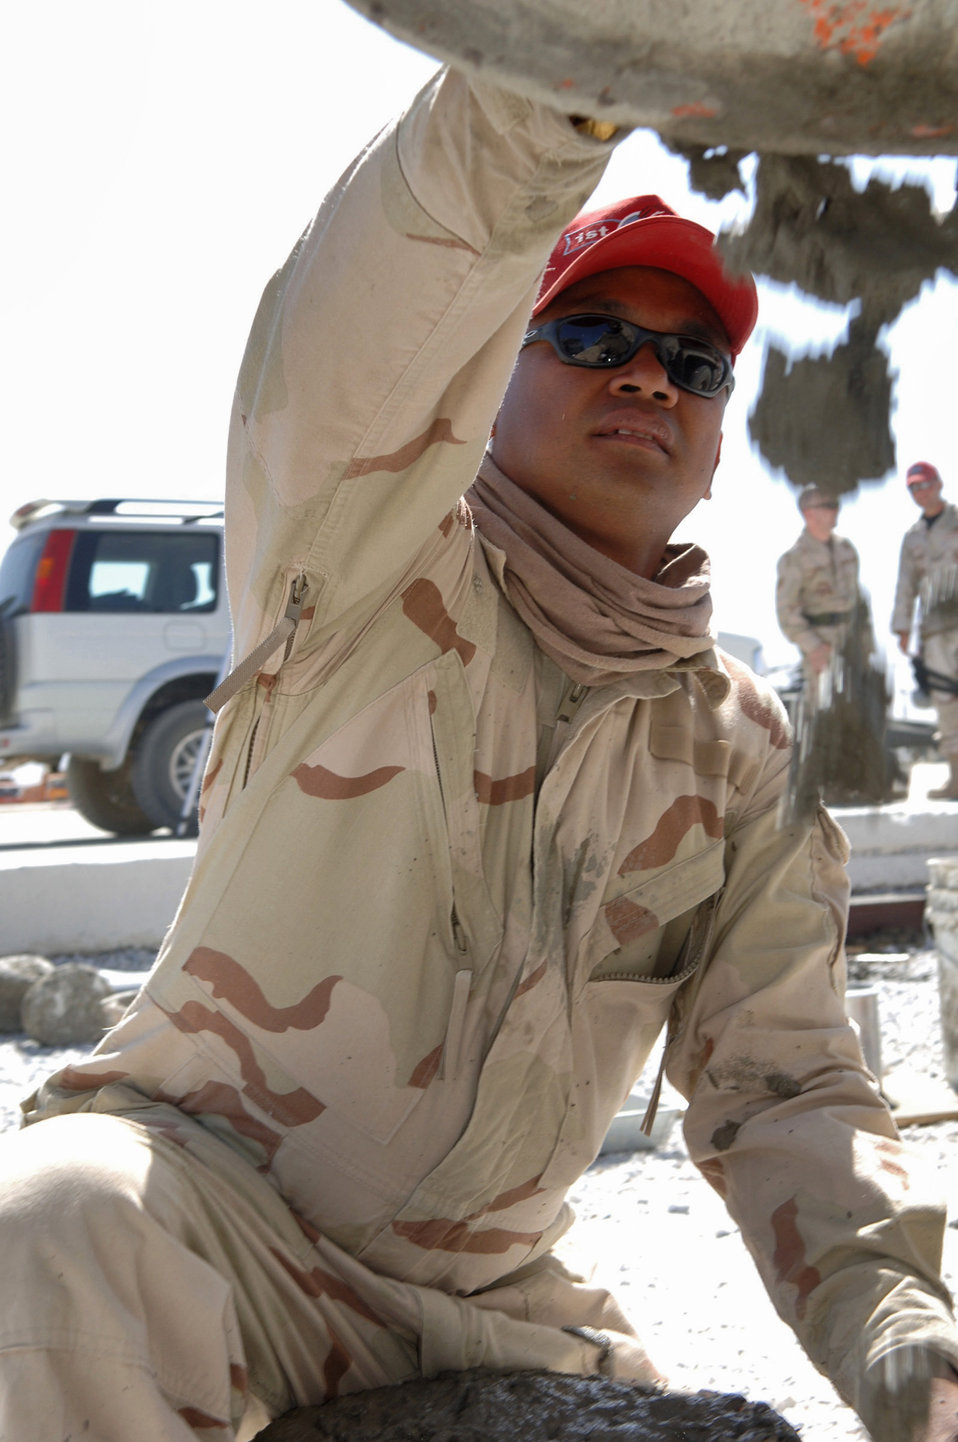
Operation Enduring Freedom

BAGRAM AIR BASE, Afghanistan -- Tech. Sgt. Adonis Padua takes a sample of concrete to test its structural integrity and quality. The 1st Expeditionary Red Horse Group from Nellis Air Force Base, Nev., is using the concrete to add an additional 60,000 square meters of aircraft ramp space here as part of a $4.4-million airfield upgrade. Sergeant Padua is an engineer assistant with the 1st ERHG.